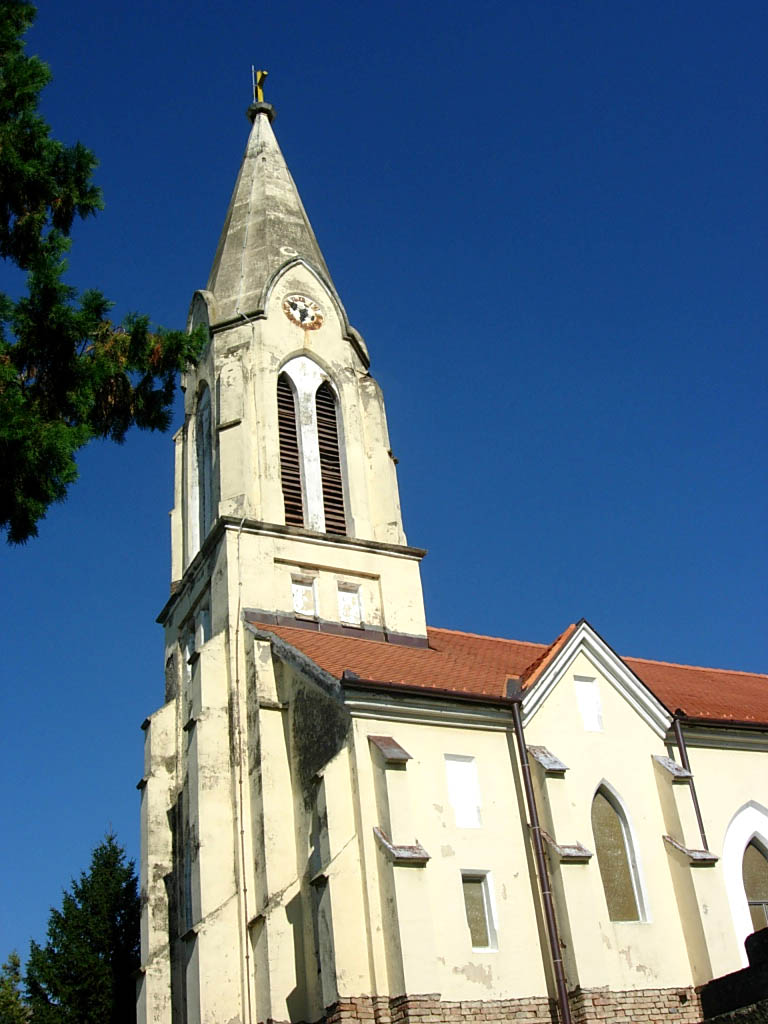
Uhaza1